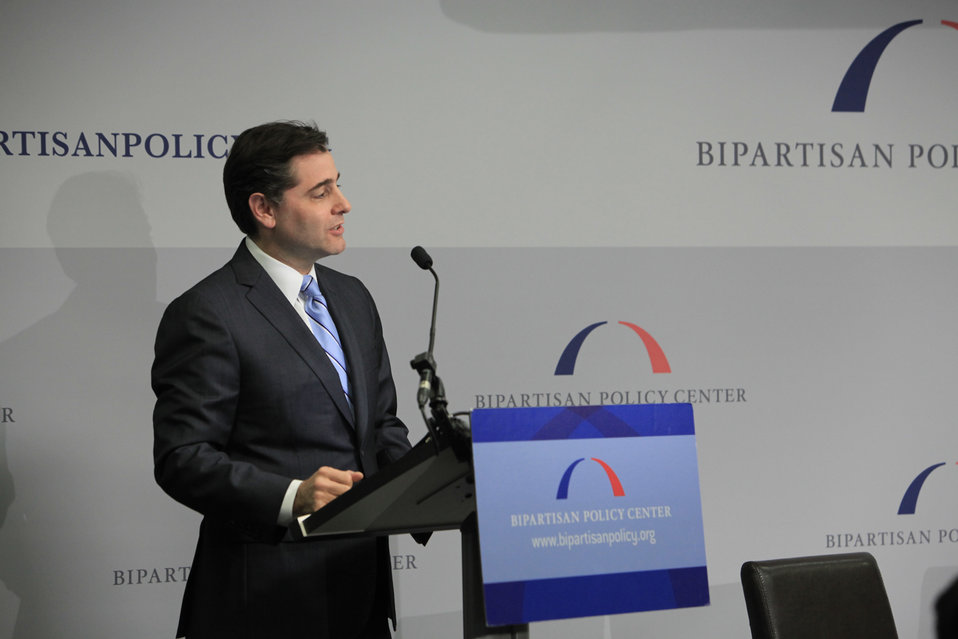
FCC Chairman Genachowski speaks about Cybersecurity at the Bipartisan Policy Center in Washington, DC, on February 22, 2012.